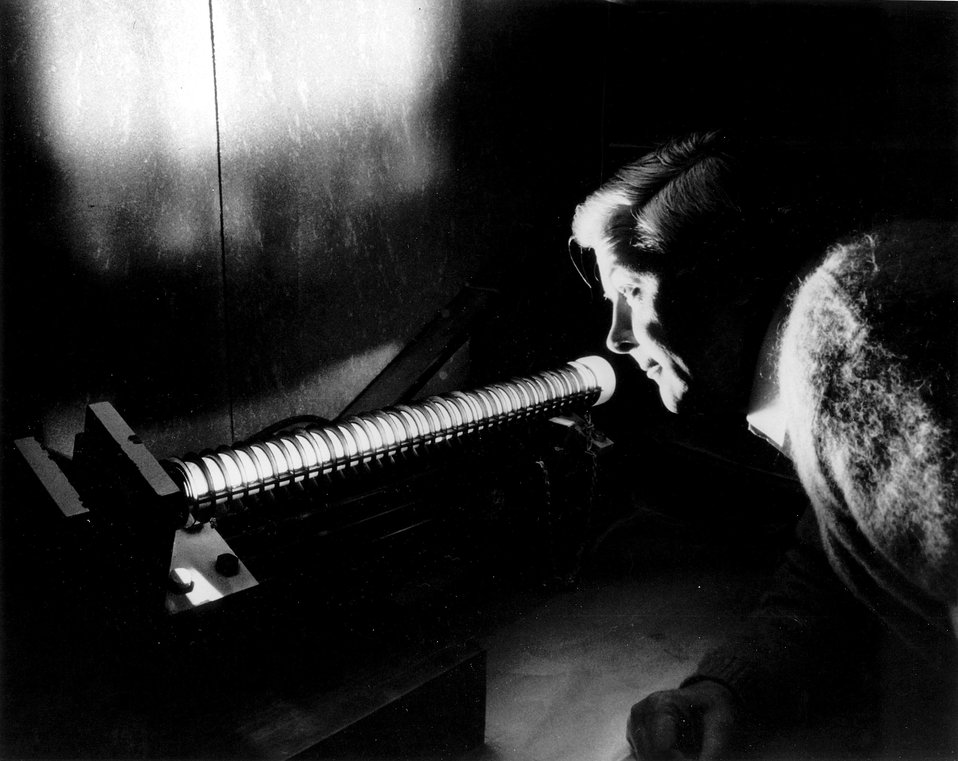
One of the electronic flash tubes which illuminate events in the 40-inch Heavy Liquid Bubble Chamber, at Argonne, is tested.
c.1970